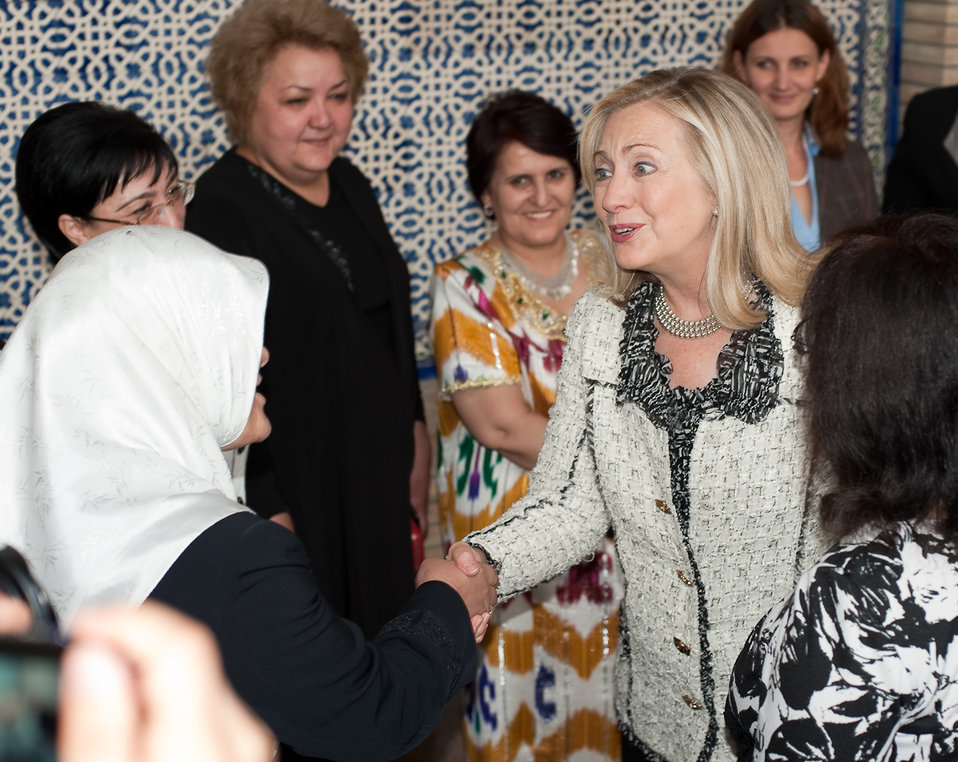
Secretary Clinton Meets With Tajik Women

U.S. Secretary of State Hillary Rodham Clinton meets with Tajik women in Dushanbe, Tajikistan, on October 22, 2011.